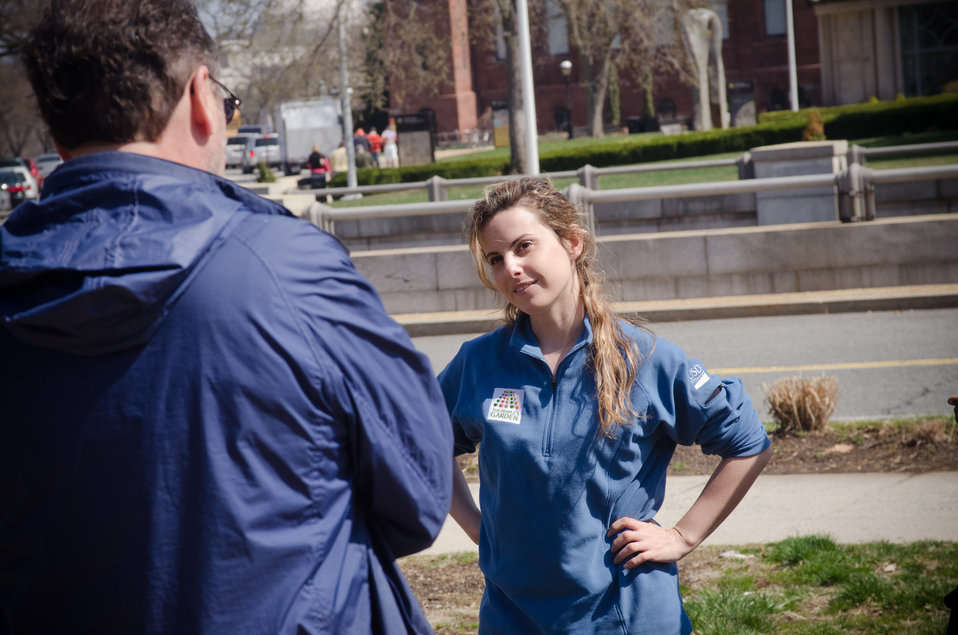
U.S. Department of Agriculture Outreach and Education Coordinator Annie Ceccarini answers some questions from a visitor who wanted to learn more about The People's Garden at the U.S. Department of Agriculture (USDA), in Washington DC, on Thursday, March 17, 2011. Ms. Ceccarini led this lunchtime volunteer group who pitched in to weed, mulch, plant, water and what ever it takes to grow a wide variety of produce. Although a few plants are ornamental, most are destined for charity kitchens. Located on the corner of Jefferson Drive, SW and 12th St. SW, people often stop to ask questions about the garden. Part of the volunteers’ training is to be a spokesperson for the People's Garden Initiative, an effort by the USDA that challenges its employees to establish People's Gardens at USDA facilities worldwide or help communities create gardens. People's Gardens vary in size and type, but all have a common purpose - to help the community and the environment.